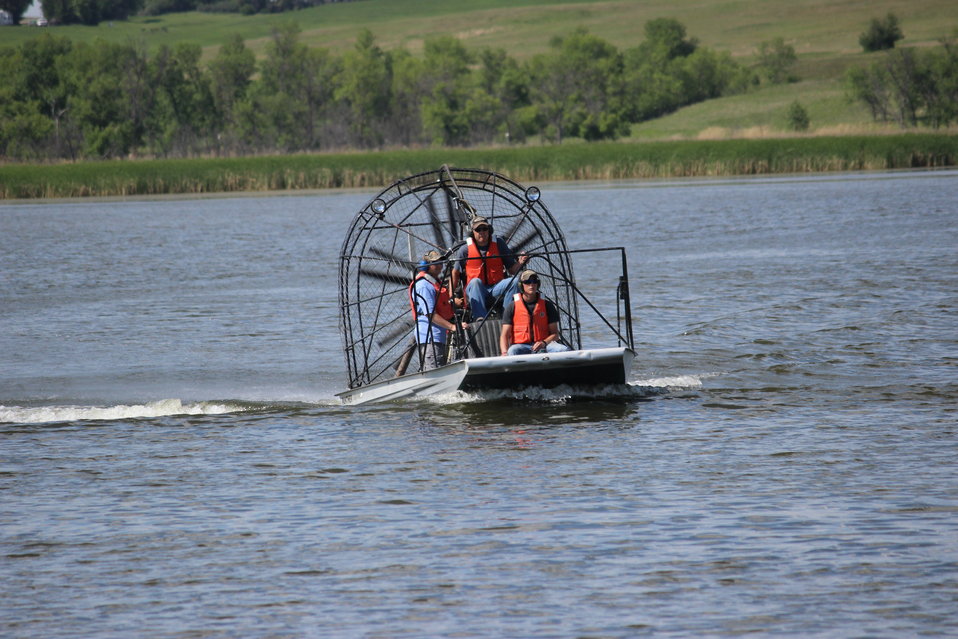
Airboat Practice

A Motorboat and Airboat Safety Training was recently held at the Upper Souris National Wildlife Refuge in North Dakota. Students received classroom training as well as field training in the use of personal flotation devices (PFDs), various motorized boats, trailers, and airboats. Students had to pass both a written exam and a practical exam where both safety and skills were demonstrated while running set up courses.